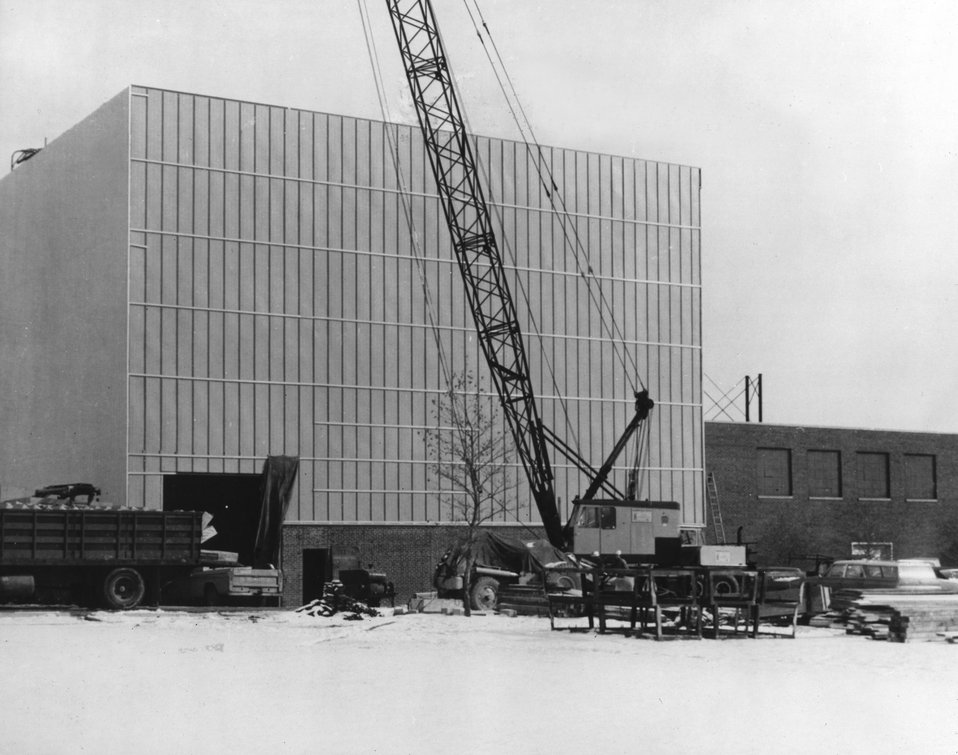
A new hot cell facility, being built by the Columbus Laboratories of Battelle to serve research needs of the nuclear power and electric utility industries, nears completion. c. 1971